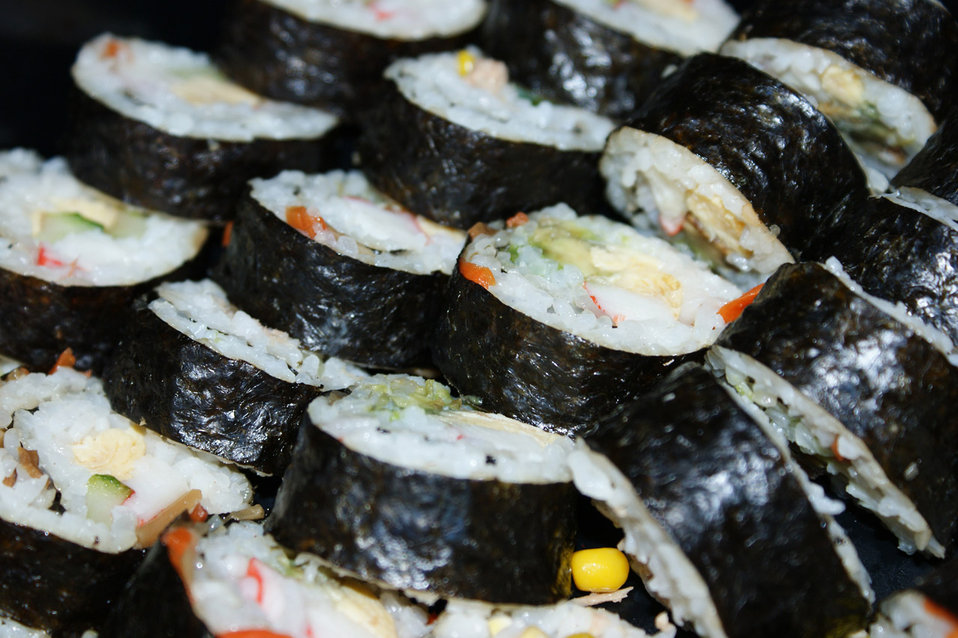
Sushi original.